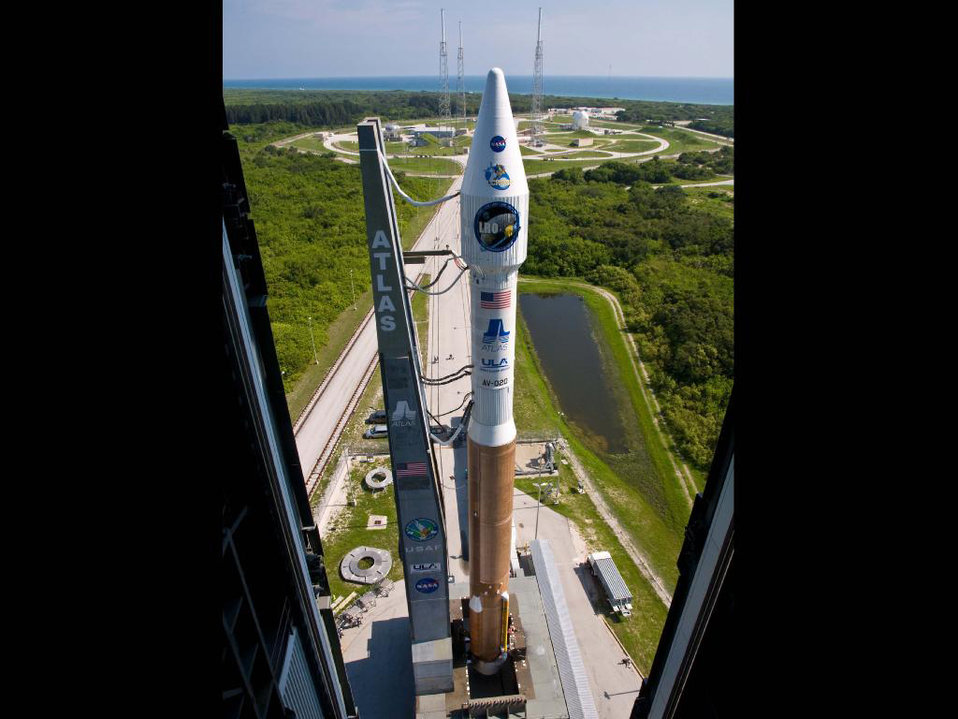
Space Technology

Air Force reservists from the 920th Rescue Wing at Patrick Air Force Base, Fla., use technology to better provide range clearing support for rocket launches like this Atlas V at Cape Canaveral Air Force Station, Fla.